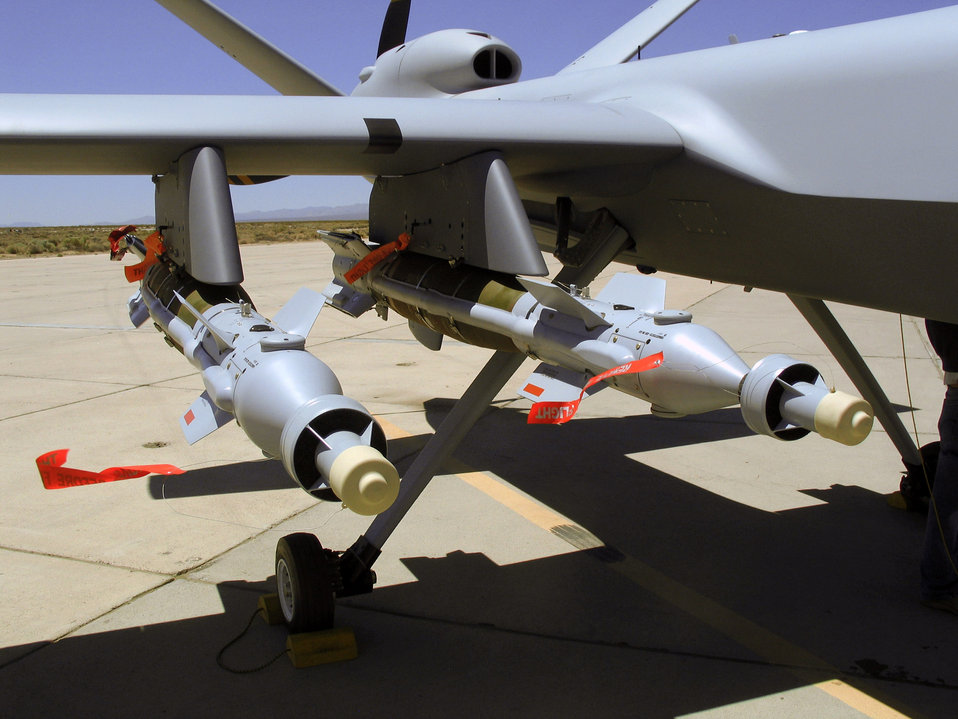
MQ-9 Reaper drops first GPS-guided weapon

The first live release of a Global Positioning System guided bomb unit-49 weapon from an MQ-9 Reaper took place May 13 at the Naval Air Warfare Center's Weapons Division at China Lake, Calif.